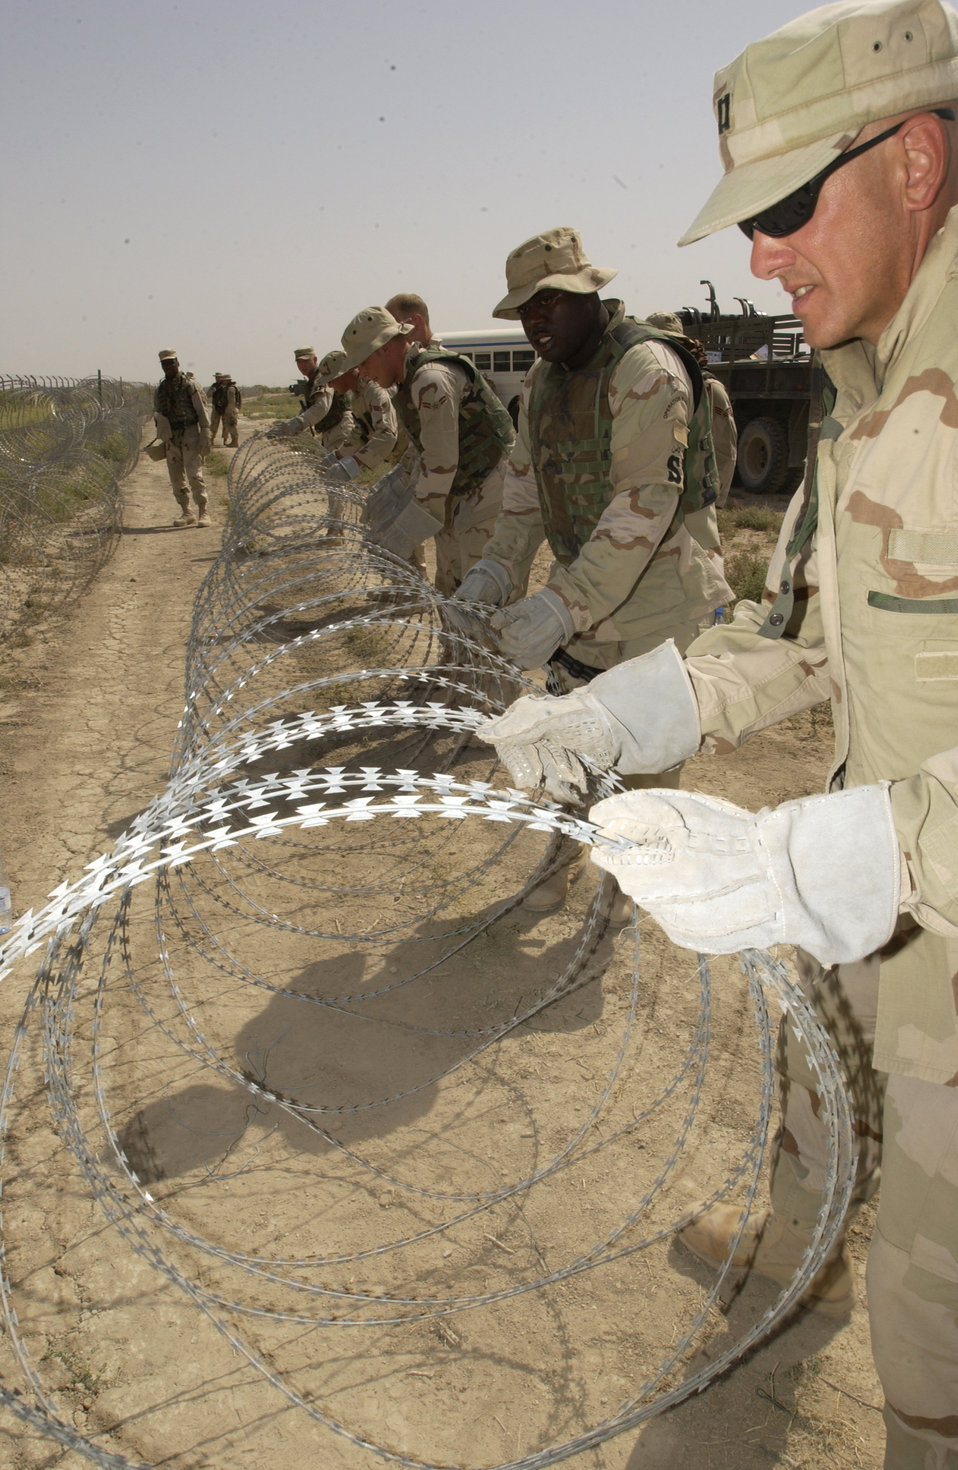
Through the wire

TALLIL AIR BASE, Iraq -- People from the base assist in securing the perimeter by helping to run concertina wire here May 27.